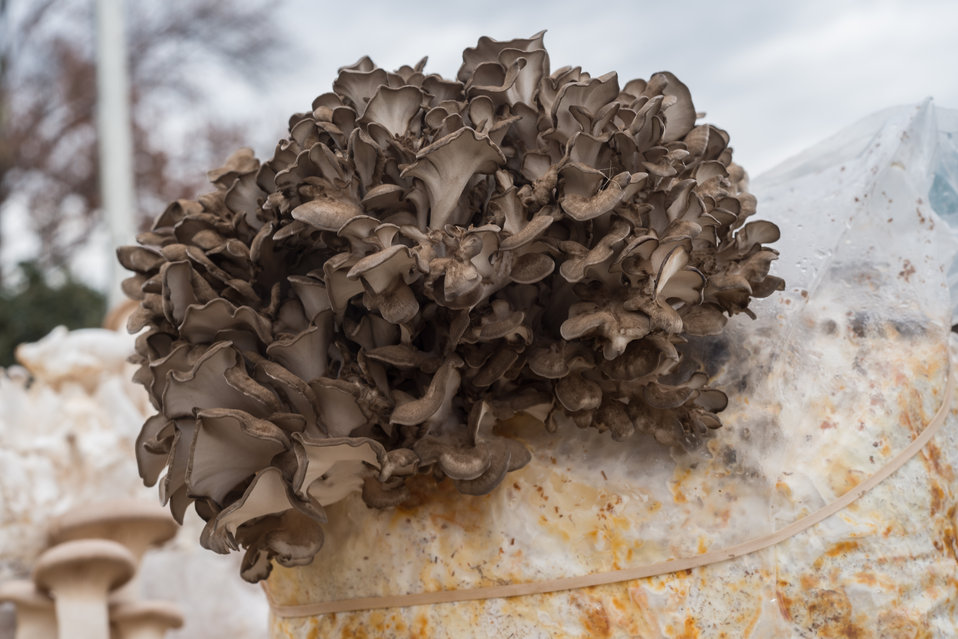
Maitake mushrooms growing on a plastic wrapped sawdust log, on display at the U.S. Department of Agriculture (USDA) farmers markets and Harvest Festival at the USDA Whitten Building east parking lot in Washington, DC, on Friday, November 22, 2013.